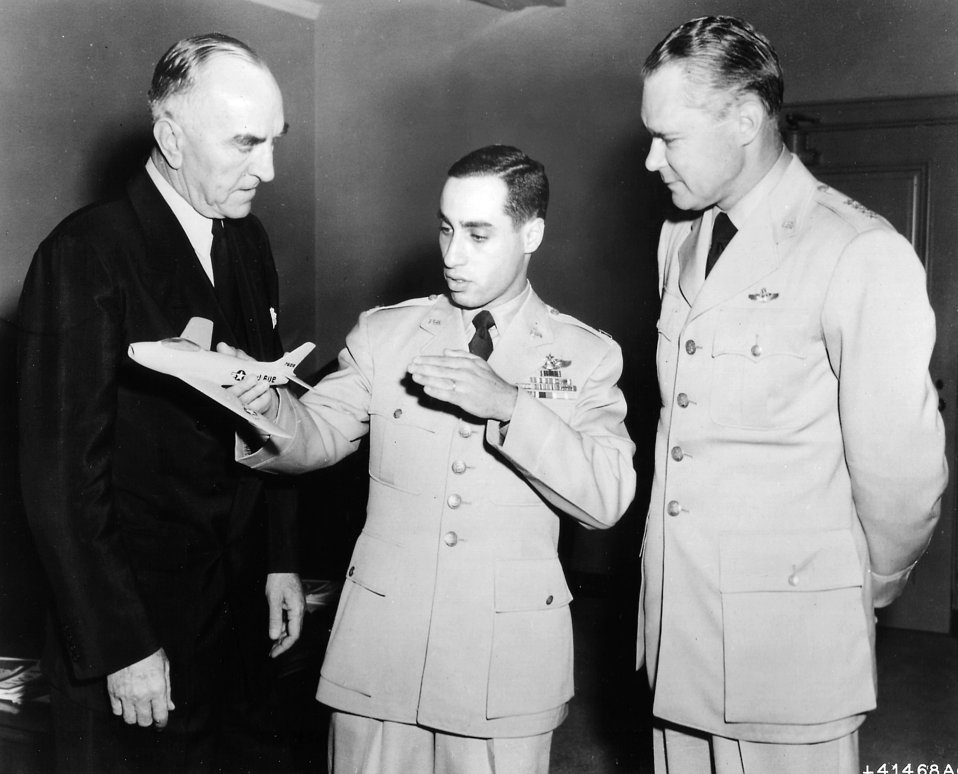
Rickenbacker and Jabara

1950's -- Captain Eddie Rickenbacker (left), First American Fighter